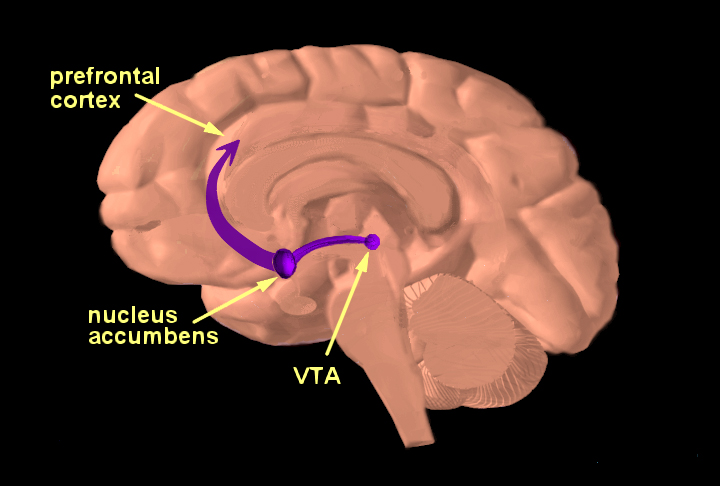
Brain reward pathway

One pathway important to understanding the effects of drugs on the brain is called the reward pathway. The reward pathway involves several parts of the brain, some of which are highlighted in this image: the ventral tegmental area (VTA), the nucleus accumbens, and the prefrontal cortex. When activated by a rewarding stimulus (e.g., food, water, sex), information travels from the VTA to the nucleus accumbens and then up to the prefrontal cortex.